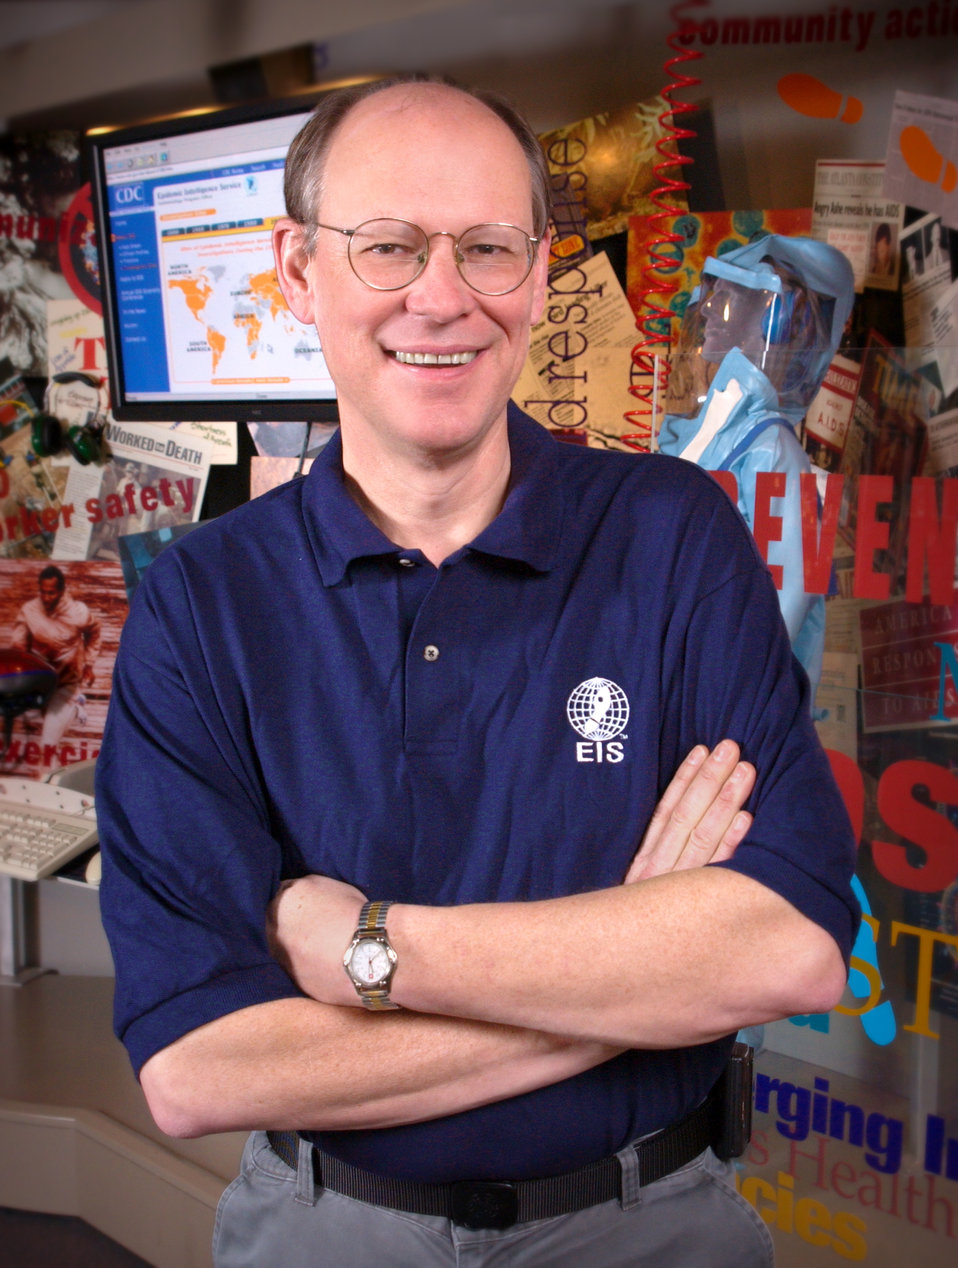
Douglas Hamilton, M.D., Ph.D., is the Dir. of the Epidemic Intelligence Service (EIS) Program.